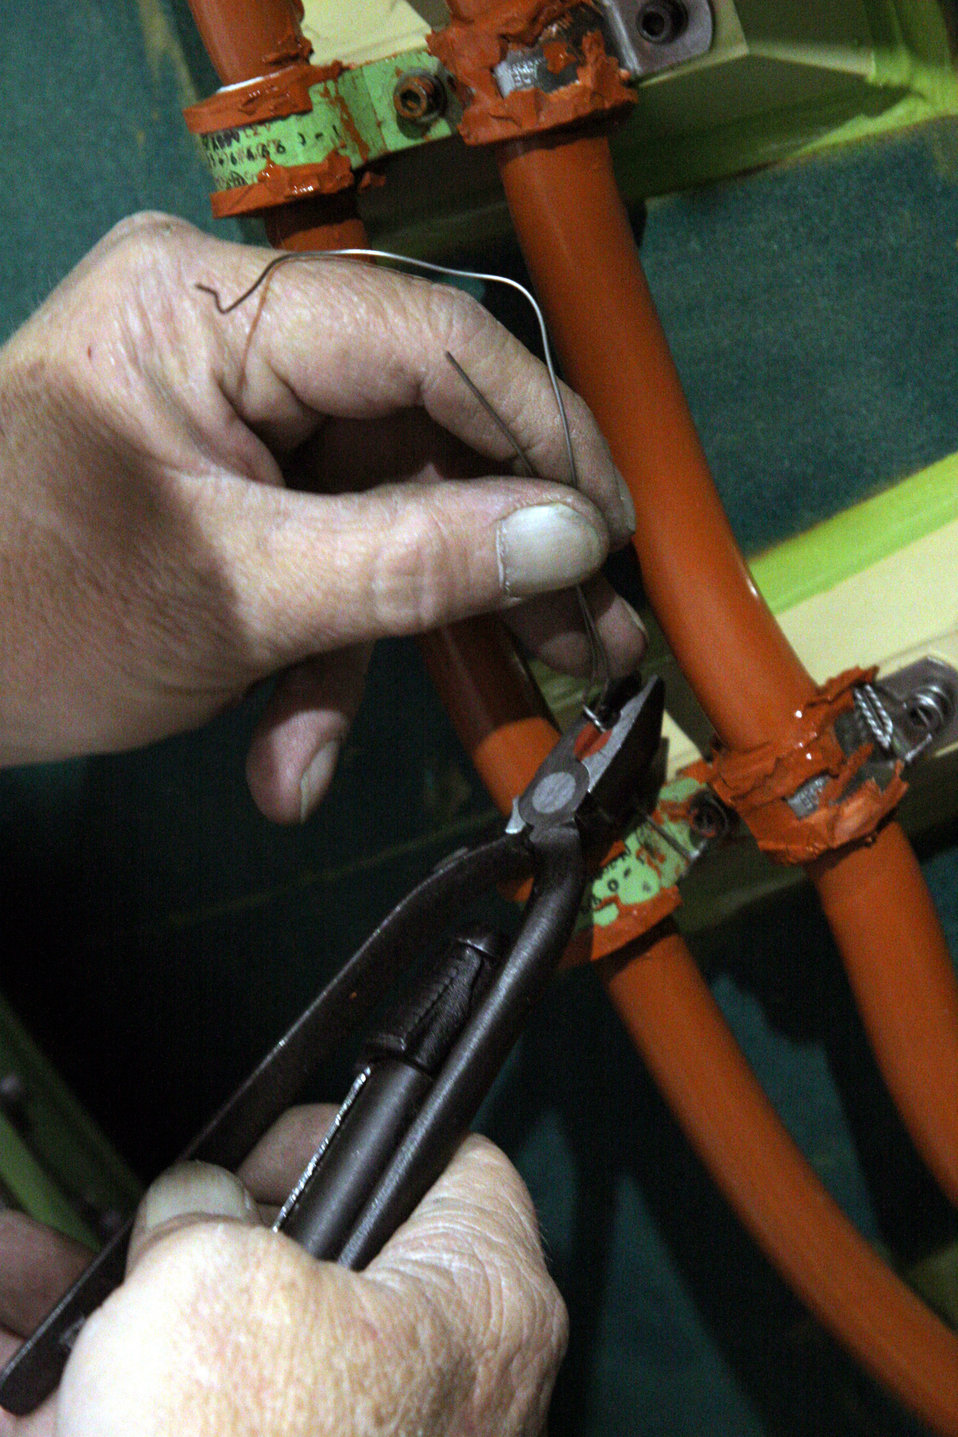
Missile mechanics

HILL AIR FORCE BASE, Utah (AFPN) -- Robert Touse safety-wires a third stage raceway cable. The cable is used to send command signals throughout the Minuteman III missile. Mr. Touse is an ordnance equipment mechanic in the 309th Missile Maintenance Group.